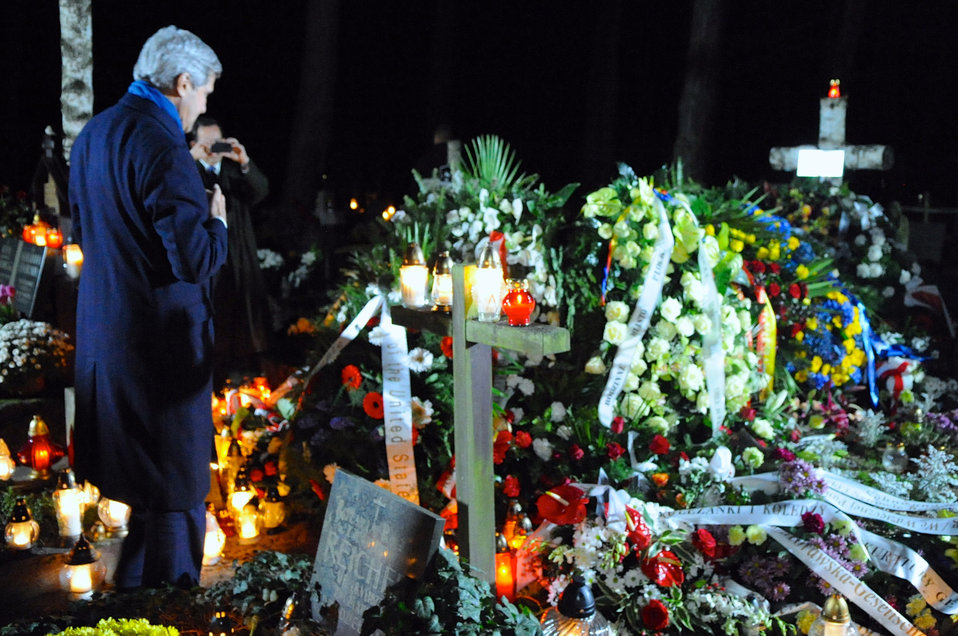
Secretary Kerry Pays Respects at Gravesite of Former Polish Prime Minister Mazowiecki

U.S. Secretary of State John Kerry pays his respects at the gravesite of former Polish Prime Minister Mazowiecki in Laski Cemetery outside Warsaw, Poland, on November 4, 2013.